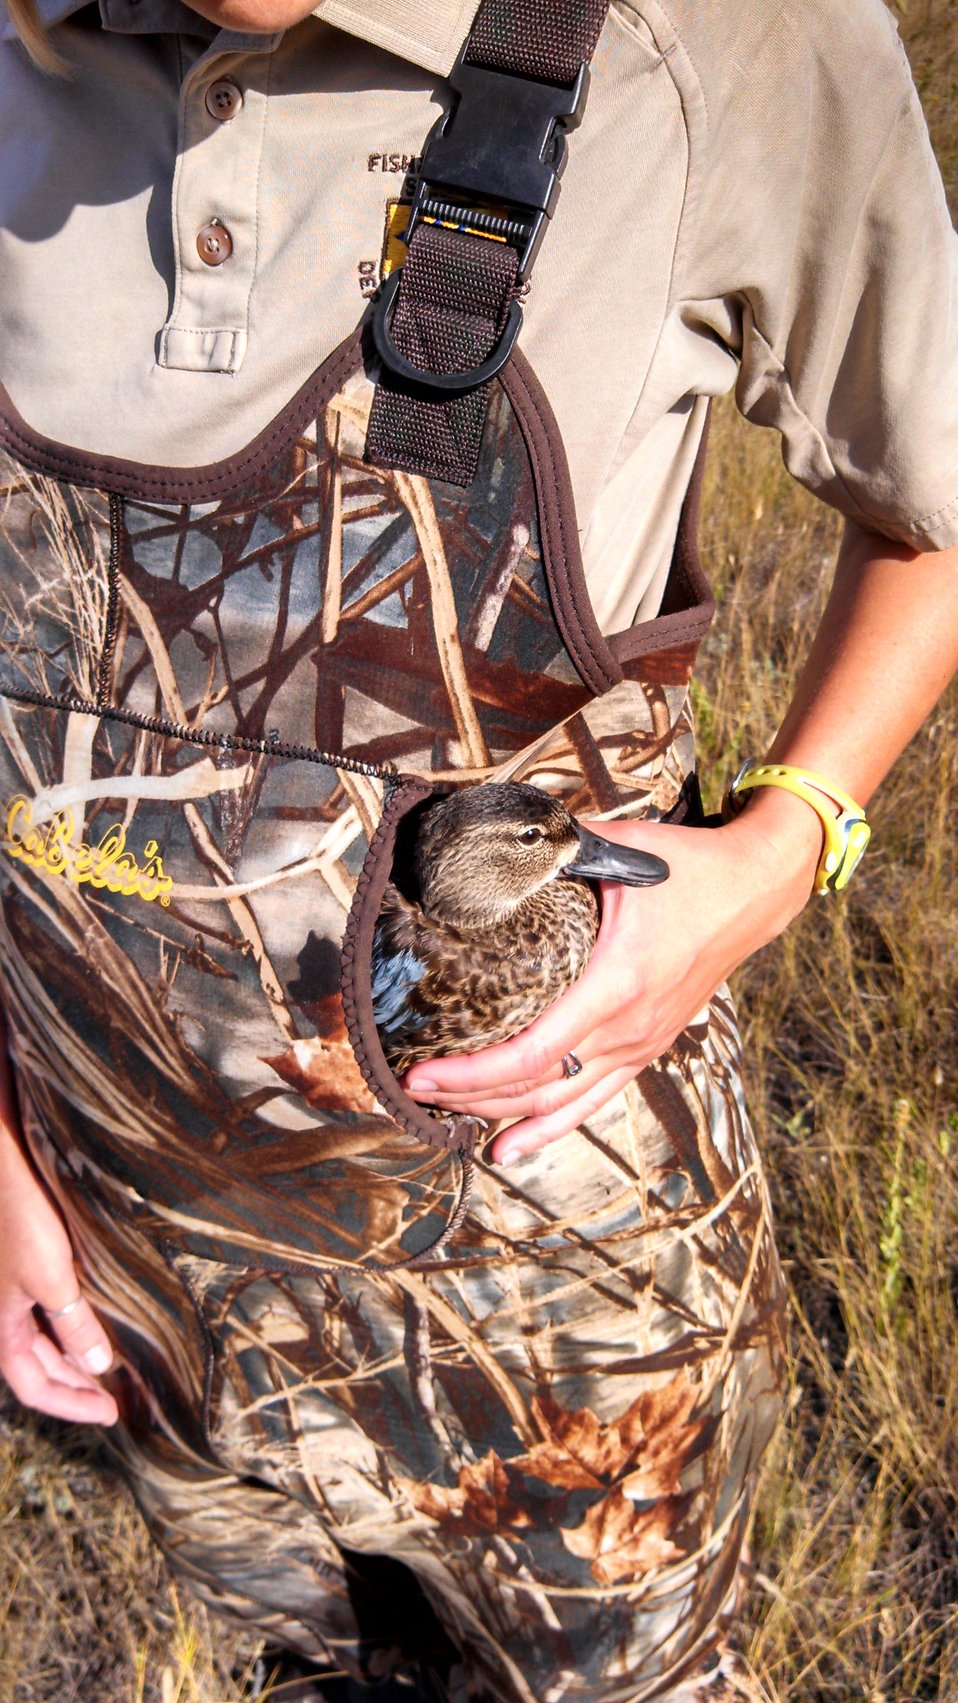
Safe and Secure

A blue-winged teal awaits banding at Bowdoin NWR.